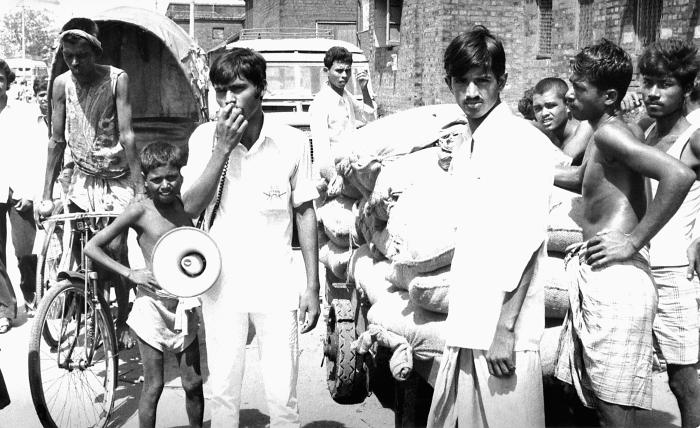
While passing a village smallpox field office, this local Bangladesh smallpox eradication team volunteer was photographed using a megaphone in order to announce the reward that was made available to those who'd report any smallpox cases. Since the marketplace drew such large crowds, it was often a place where capturing the attention of a large group of residents was made easy. If, indeed, a case was reported, from no matter the source, it was investigated fully, and if confirmed as a smallpox case by an epidemiologist, a reward was paid to the informant, no matter the age, and it was subsequently entered into the 'Containment Book'. Note the smallpox eradication team vehicle in the background.